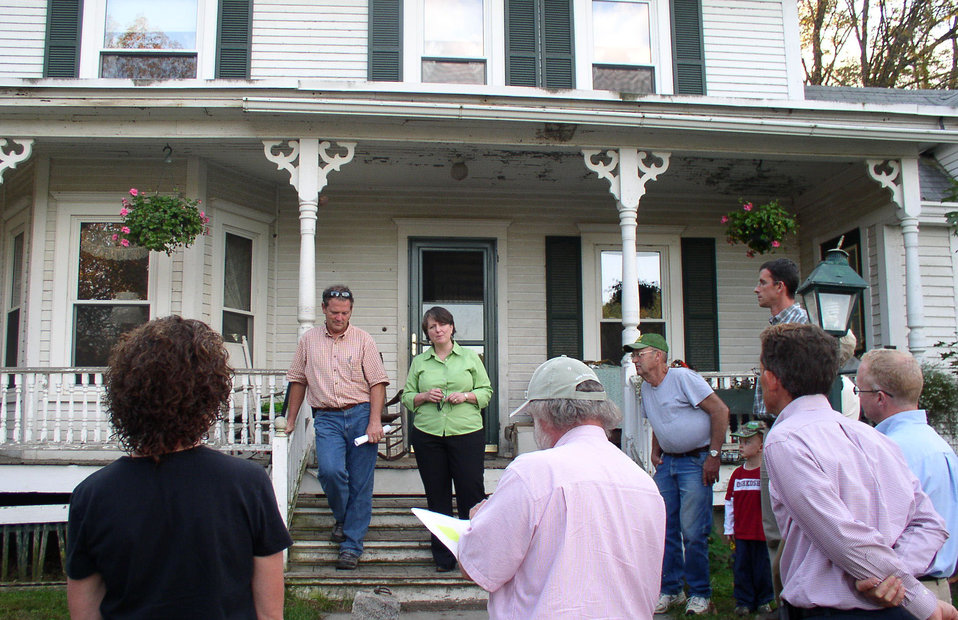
Agriculture Deputy Secretary Kathleen Merrigan speaking with farmers at the Robb Family Farm near Brattleboro, VT, on Wednesday, September 28, 2011.